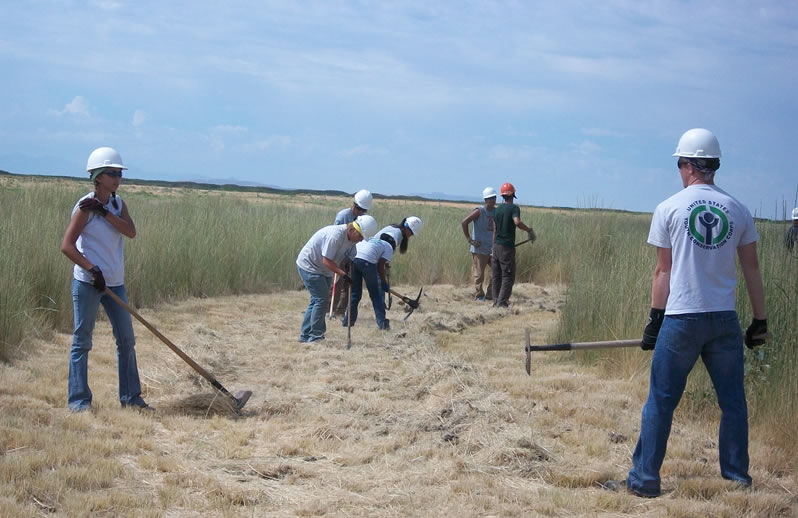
Crews Work on Trail Project

The Youth Conservation Corps crew and Utah Conservation corps crew use tools to clear vegetation to increase the trail at the James V. Hansen visitor center by 1.2 miles.